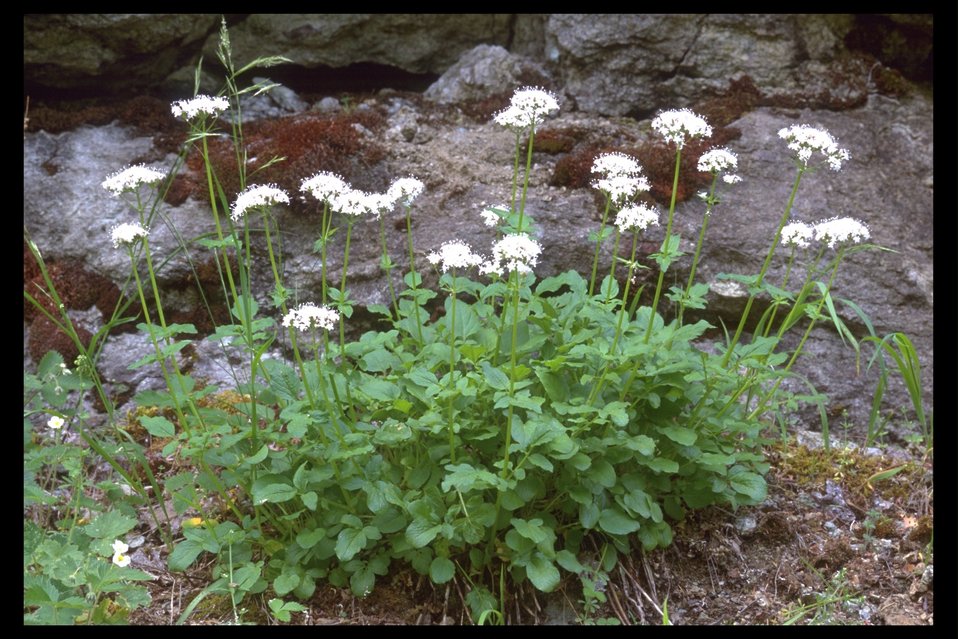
Mountain Valerian (Valeriana sitchensis) at Upper Trail Creek.